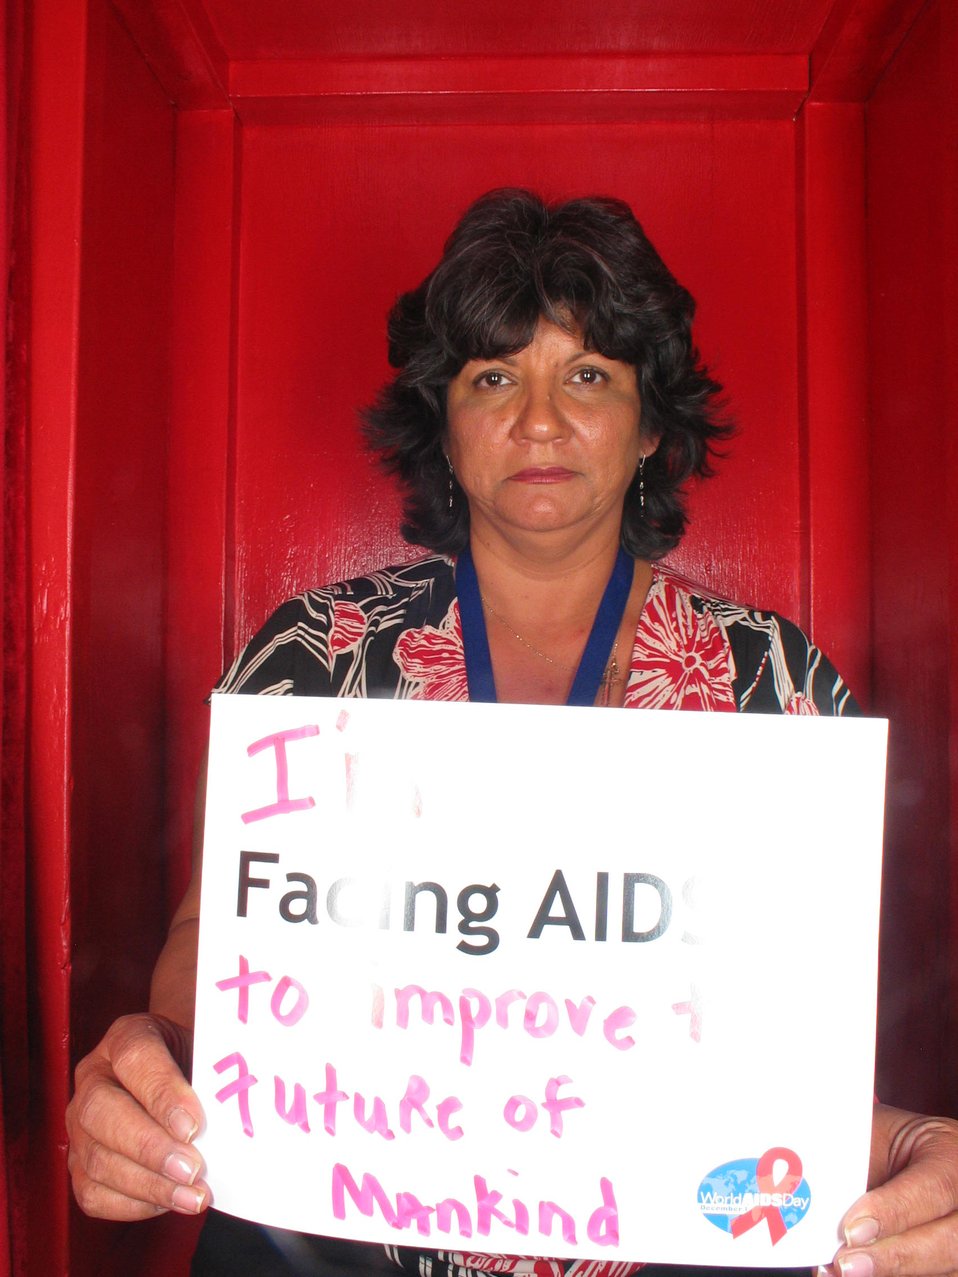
I am Facing AIDS to improve the future of mankind